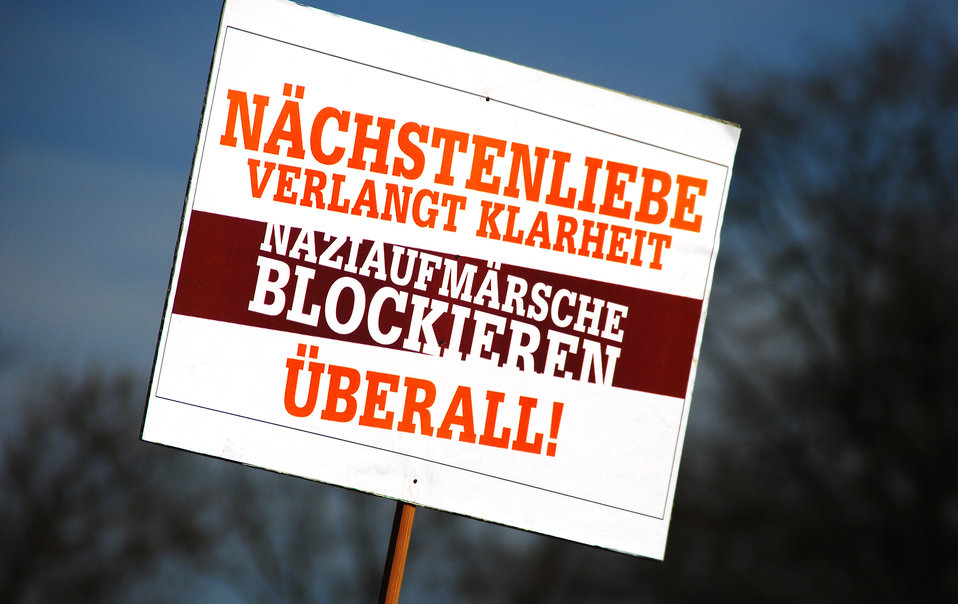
Proteste gegen den Nazi-Aufmarsch am 24.3.2012 in Frankfurt (Oder)